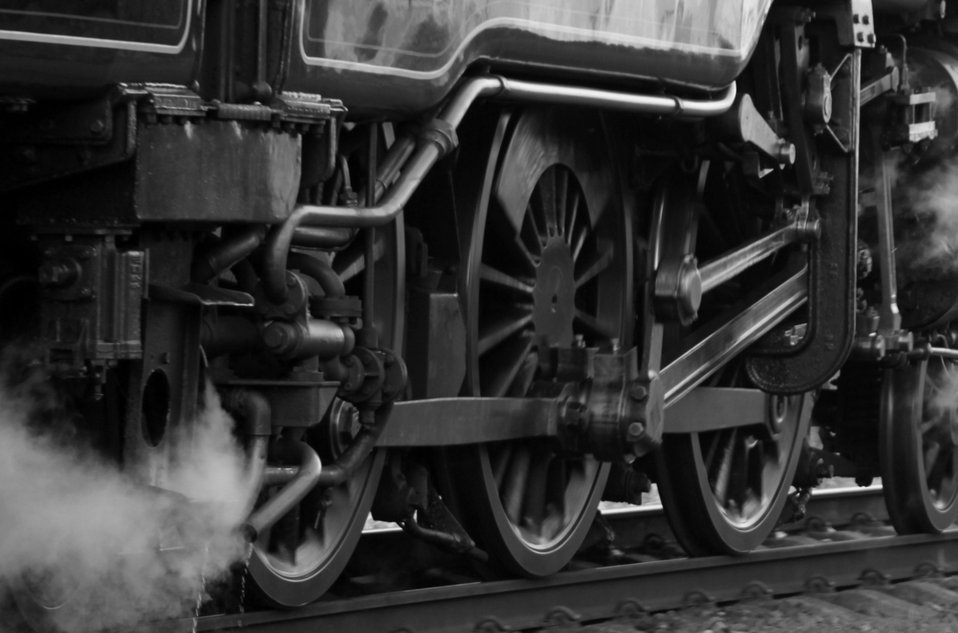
Steam power

Old time steam.